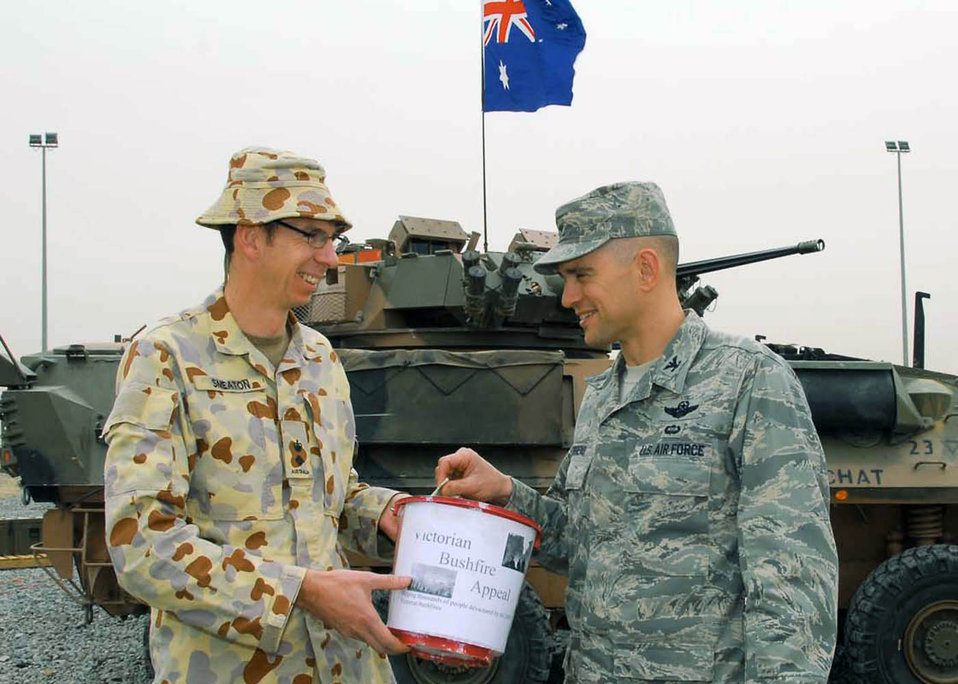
386th Airman contribute to Victoria Wildfire relief

Col. Cameron Torrens, 386th Air Expeditionary Wing commander, donates money Feb. 27 on behalf of the wing to Australian Army Lt. Col. Ed Smeaton, Force Support Unit 1 commander, at an air base in Southwest Asia. The money will be given to assist the victims of brush fires in Australia that killed more than 200 Australians and left hundreds more homeless